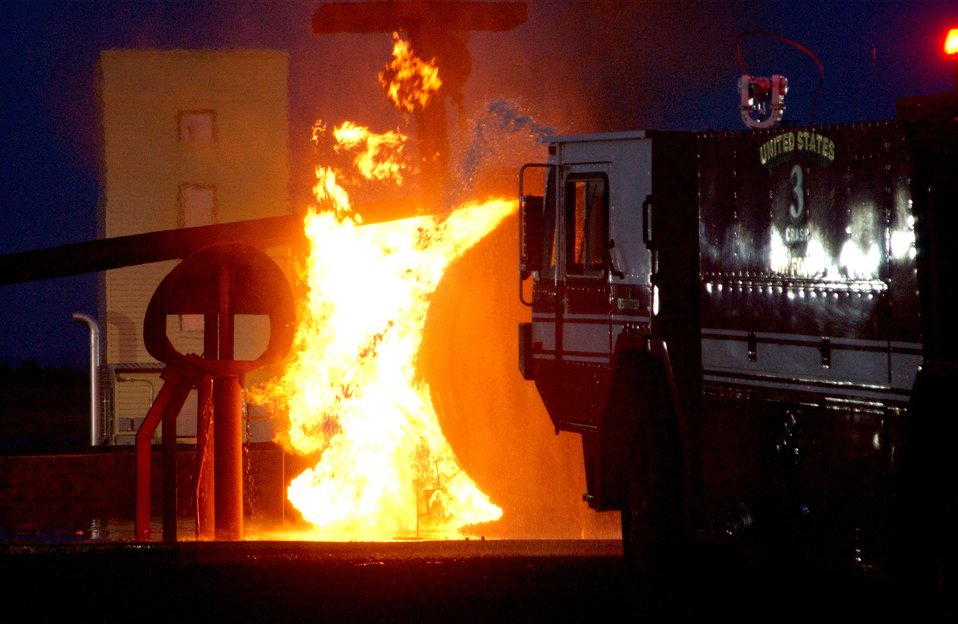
Fire training

FAIRCHILD AIR FORCE BASE, Wash. - One of the base fire engines attacks a ground fire during training here recently. Real world fire training is conducted several times a month to ensure firefighters are prepared to respond to any type of fire incident. The firefighters are assigned to the 92nd Civil Engineer Squadron.